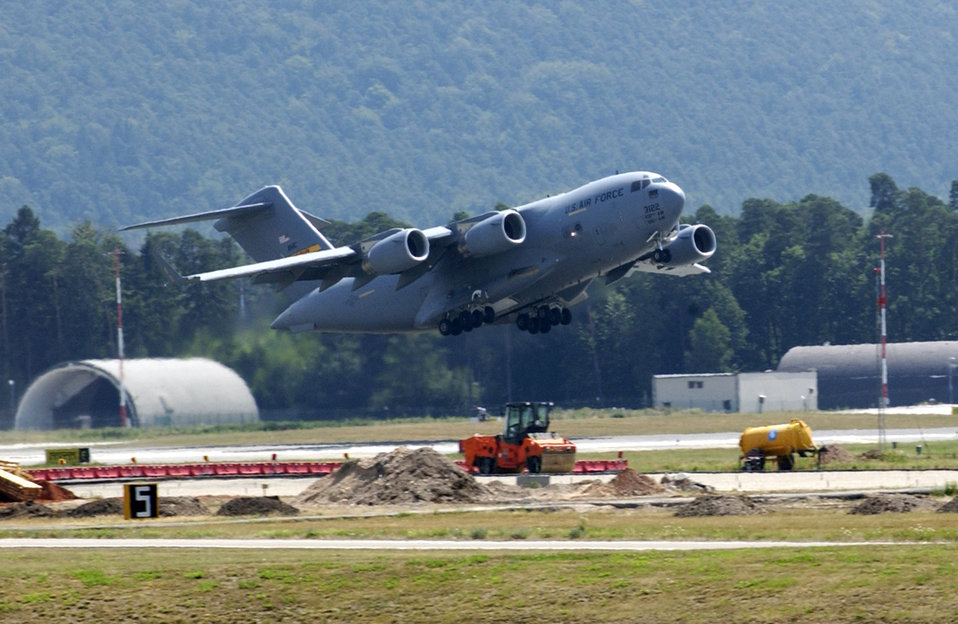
Heading to America

A C-17 Globemaster III takes off from Ramstein Air Base, Germany, on July 23, filled with Americans from Lebanon. Airmen at Ramstein provided humanitarian assistance for American citizens departing the Lebanon crisis on their way to the United States.